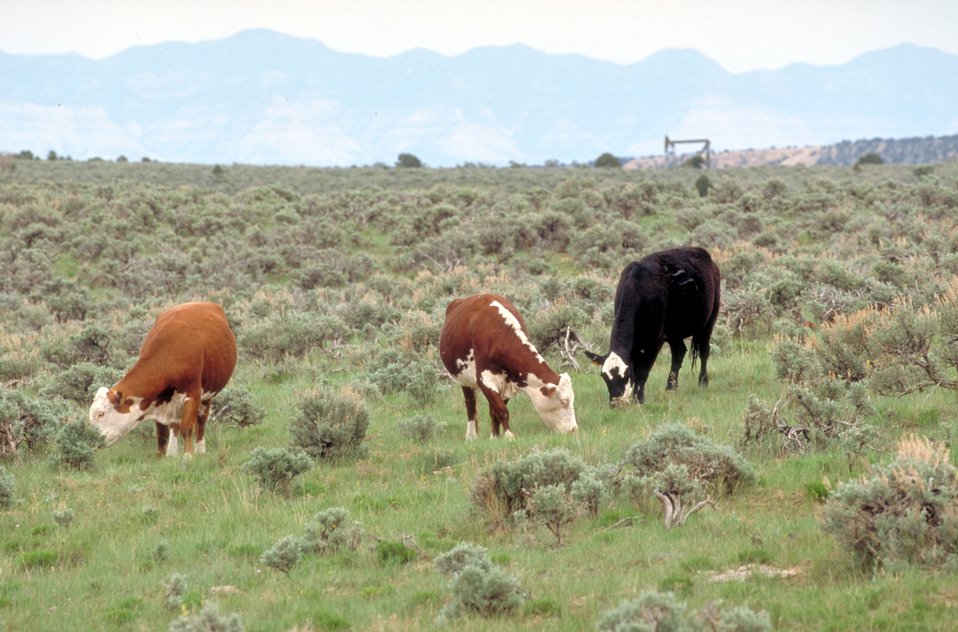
Livestock grazing on BLM lands near Price, Utah.